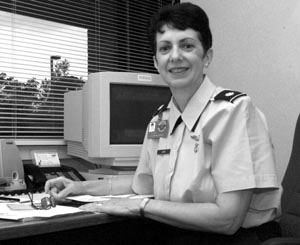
Colonel Regina Aune

1970's -- Then Lt. Col. Regina Aune, 437th Medical Operations Sqaudron commander, Charleston Air Force Base, S.C., recounts an experience in Vietnam that saved and changed lives. While a lieutenant in the spring of 1975, flight nurse Regina Aune became the first and only woman to receive the Cheney Award, recognizing an act of valor